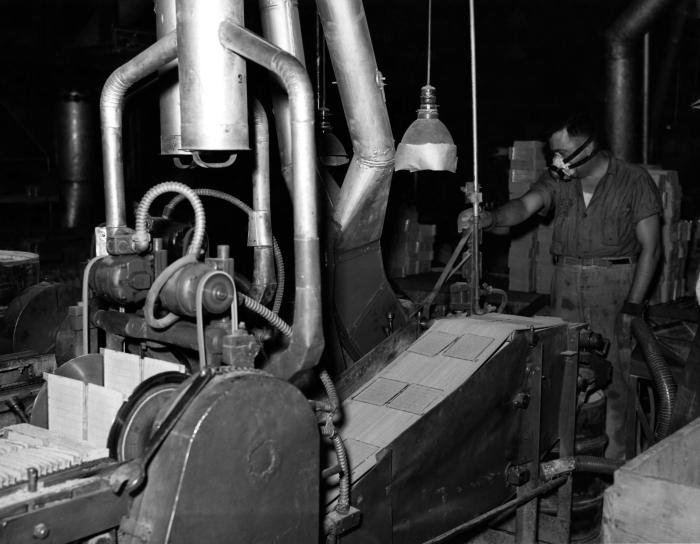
Published in the 'Public Health Bulletin', No. 262, 1941, this historic image, which was provided by the Center for Disease Control's (CDC), National Institute for Occupational Safety and Health (NIOSH) depicted a battery factory in which a respirator-wearing worker was in the process of 'finishing' metal storage battery plates. As a device containing both lead, a toxic heavy metal, and acid, in the form of sulfuric acid, batteries are potentially dangerous, both in their finished state, as well as during their manufacture. Precautions need be taken when building a battery, including the use of goggles, gloves, and filtered breathing devices. This worker was wearing the requisite filtered mask and protective gloves, but no goggles, which would have prevented accidental eye exposure to splashing fluids.